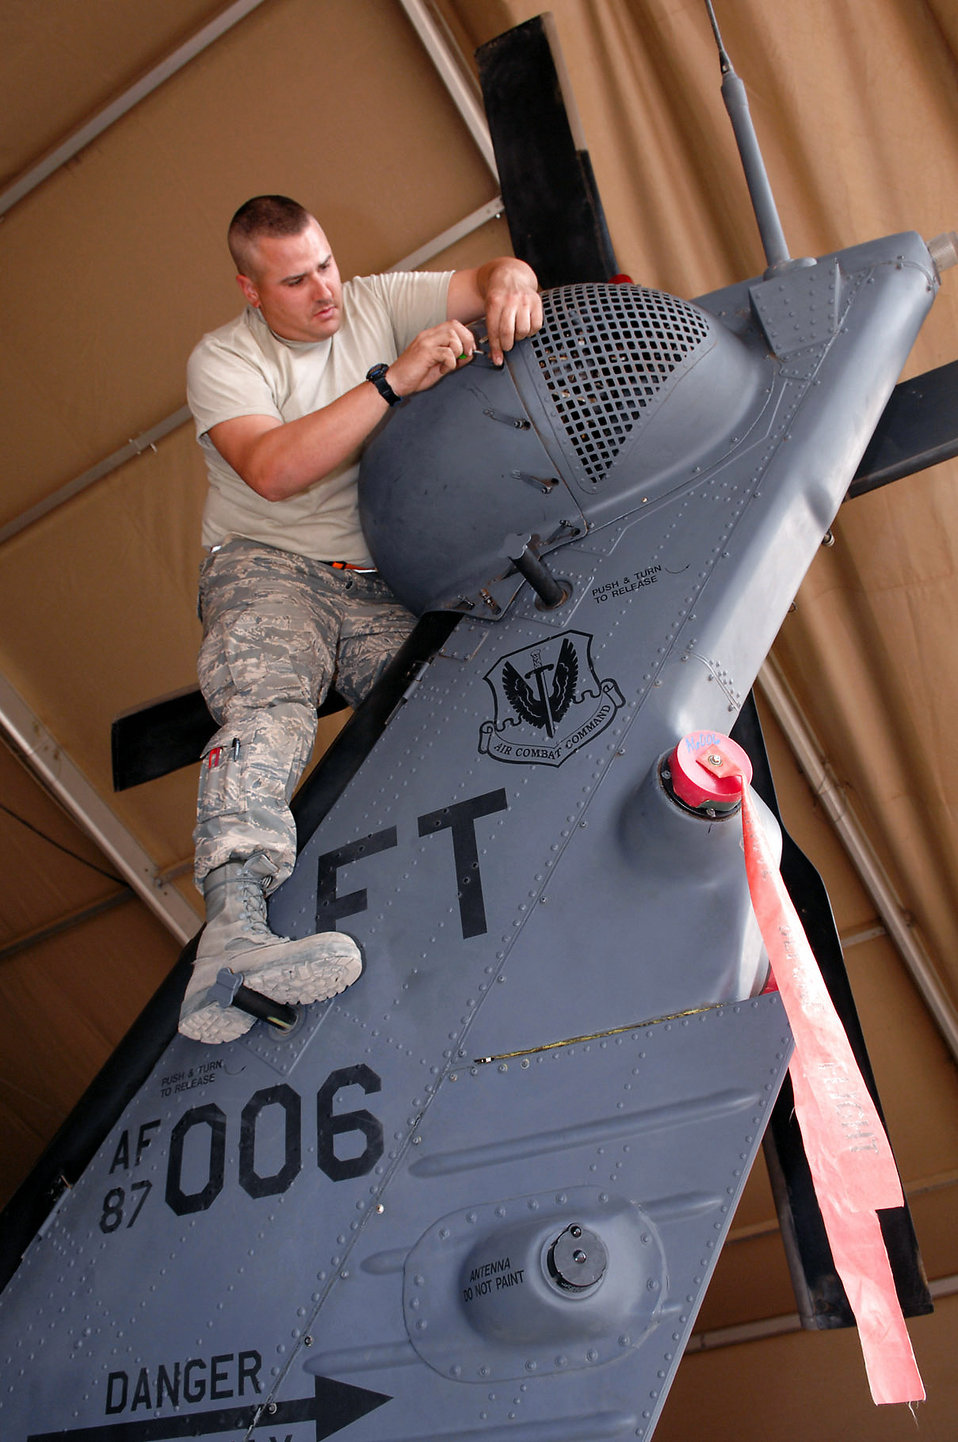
Performing some high altitude maintenance

Staff Sgt. Tait Delzer re-installs a tail rotor cover on an HH-60 Pave Hawk helicopter March 12 at Balad Air Base, Iraq, following a preventative maintenance on the aircraft. Sergeant Delzer, a crew chief with the 64th Expeditionary Helicopter Maintenance Unit.